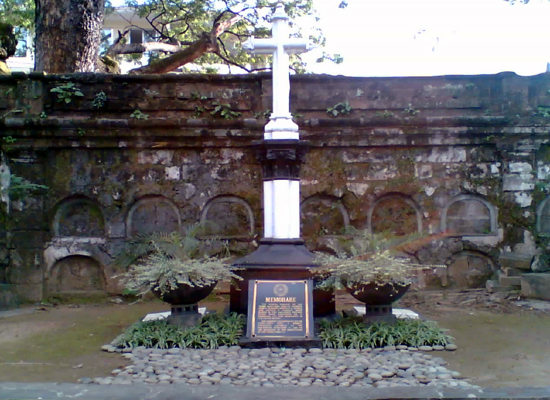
This site is where the GOMBURZA were interred.